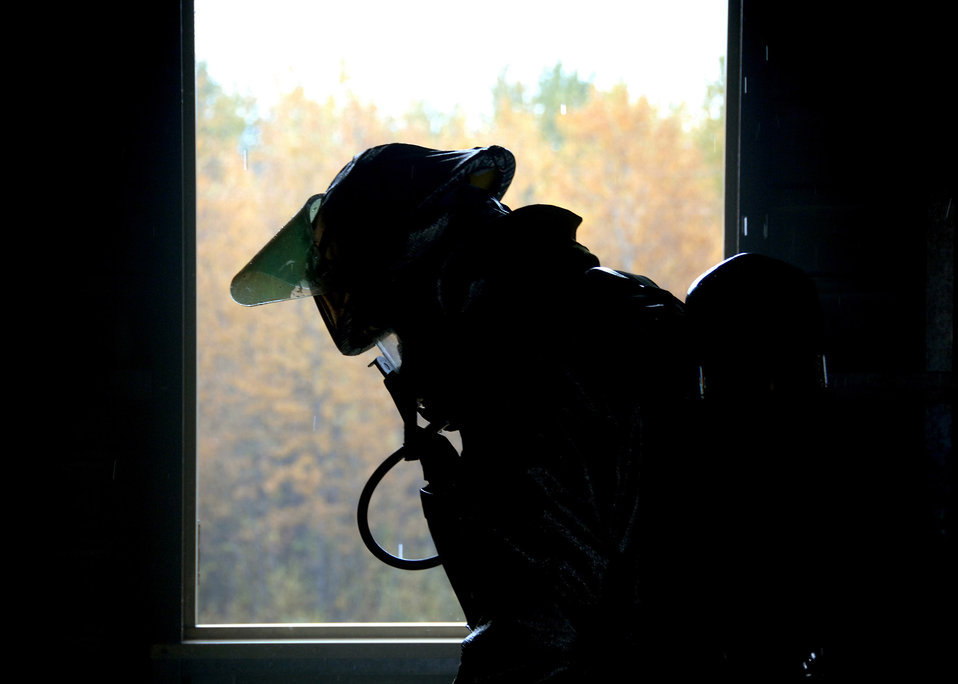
We didn't start the fire...

A firefighter from 354th Civil Engineer Squadron waits for radio contact with his crew chief during a training operation Sept. 13 at Eielson Air Force Base, Alaska. The firefighters relay information back and forth to get an understanding of the situation and to keep command up to date on the operation.